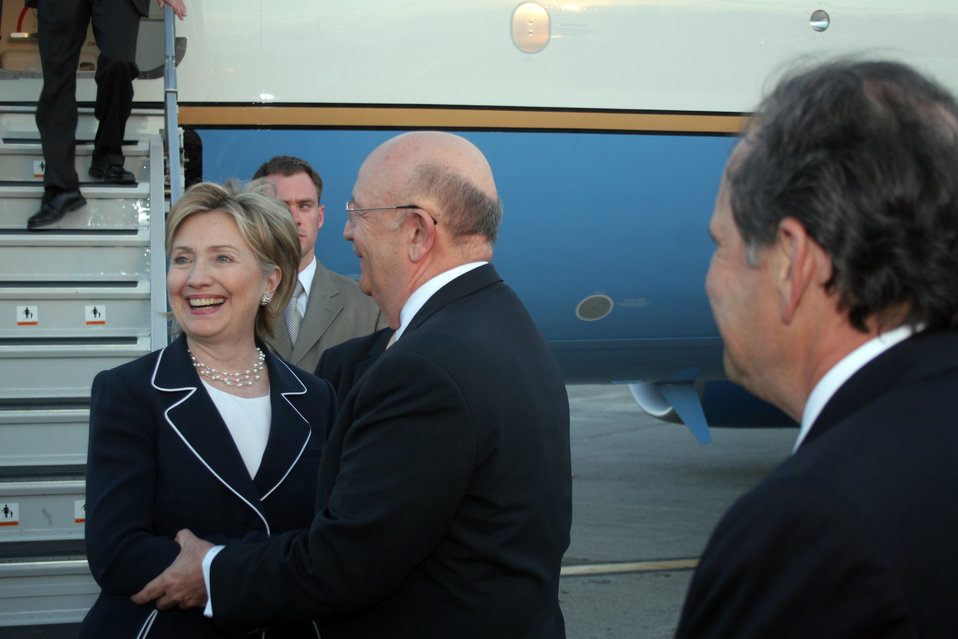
Secretary Clinton Arrives in Dominican Republic

U.S. Secretary of State, Hillary Rodham Clinton with Dominican Republic Foreign minister, Carlos Morales Troncoso upon arrival at Santo Domingo, Dominican Republic April 16, 2009.